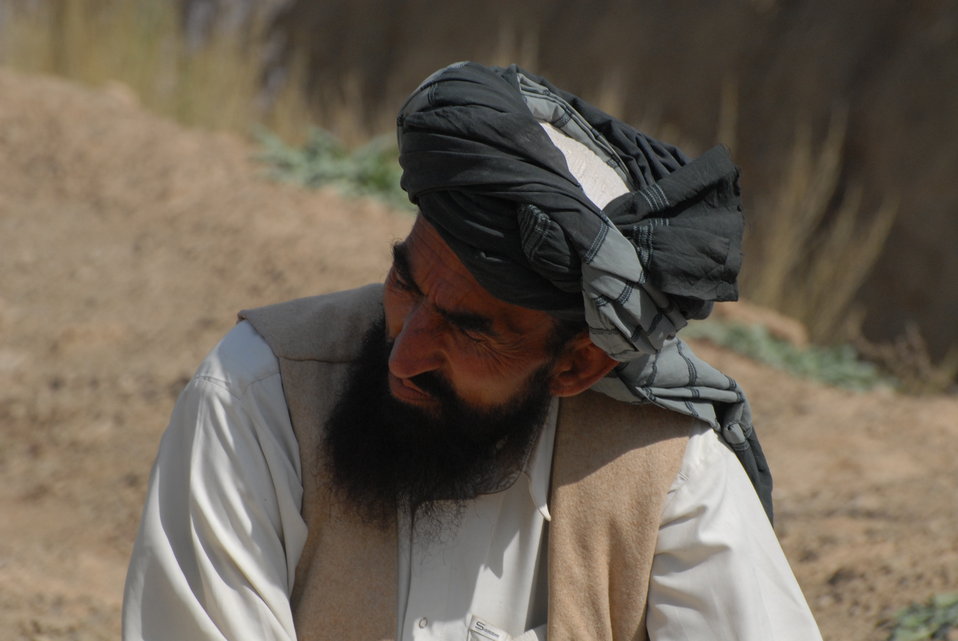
'On the Road' in Paktya Province